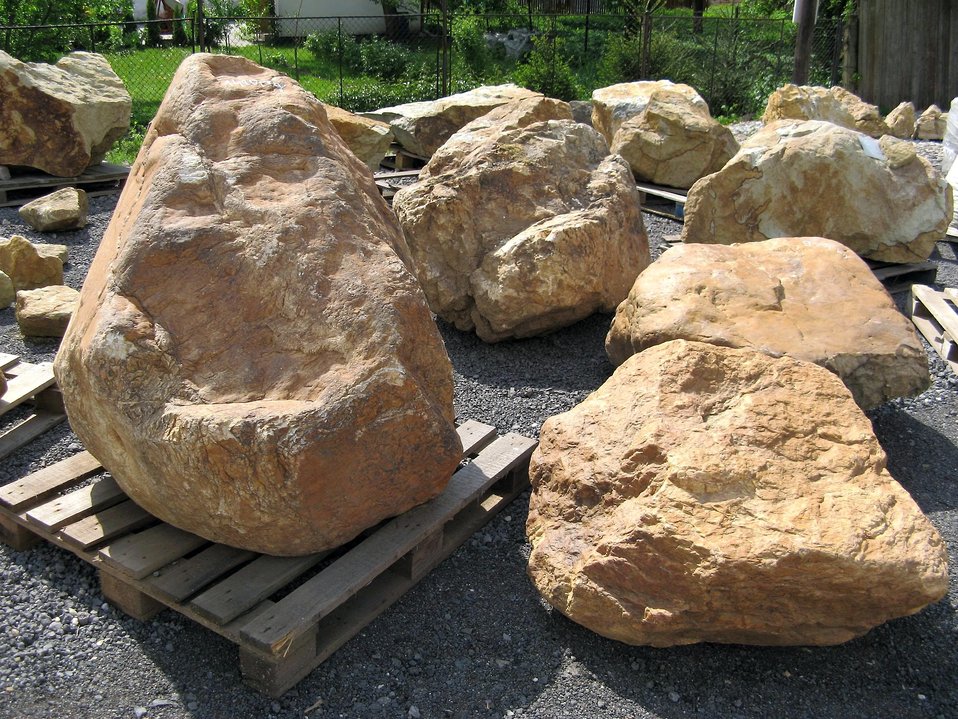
English:
Image title: Beautiful stones Image from Public domain images website, http://www.public-domain-image.com/full-image/nature-landscapes-public-domain-images-pictures/rock-stones-public-domain-images-pictures/beautiful-stones.jpg.html